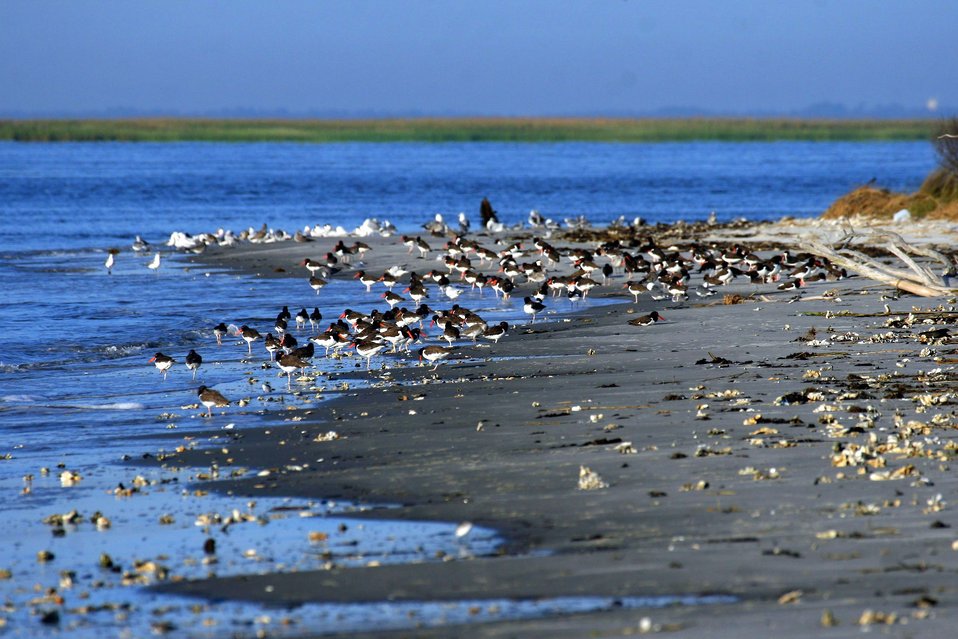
Wolf Island Refuge

American oystercatchers at Wolf Island National Wildlife Refuge, GA.